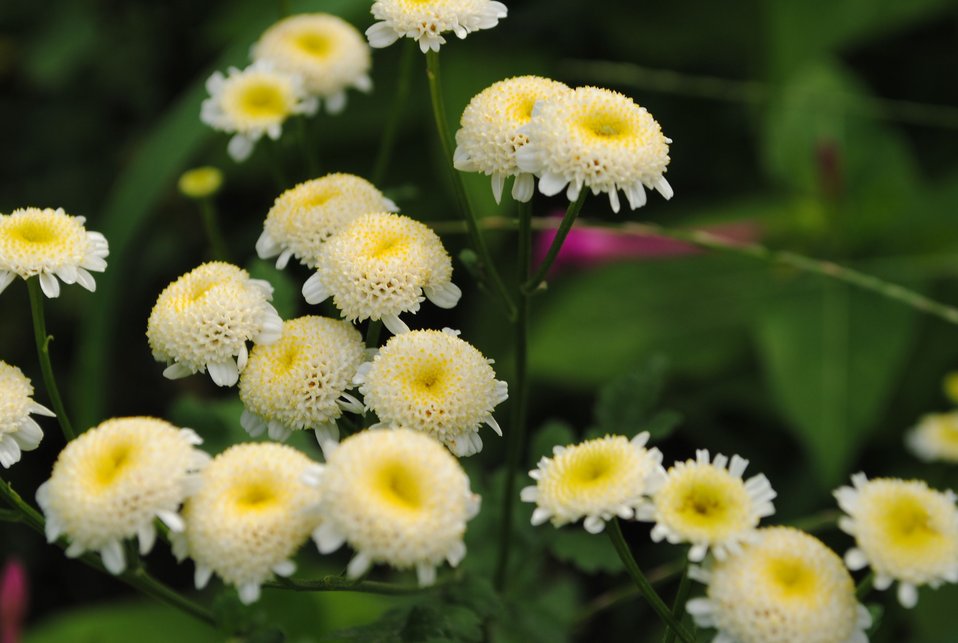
English:
Image title: Beautiful yellows flowers Image from Public domain images website, http://www.public-domain-image.com/full-image/flora-plants-public-domain-images-pictures/flowers-public-domain-images-pictures/beautiful-yellows-flowers.jpg.html